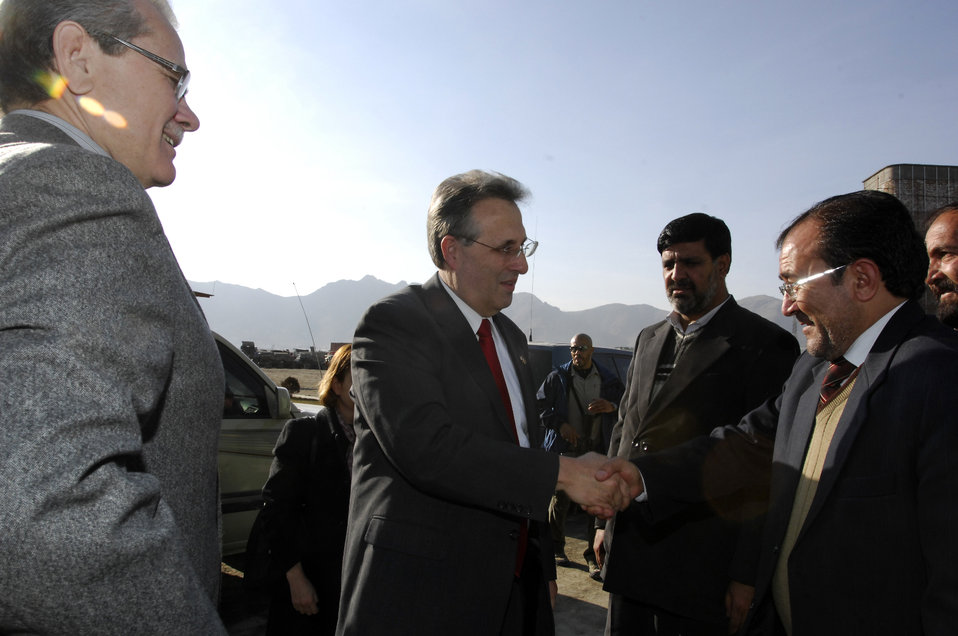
Care73 (1)